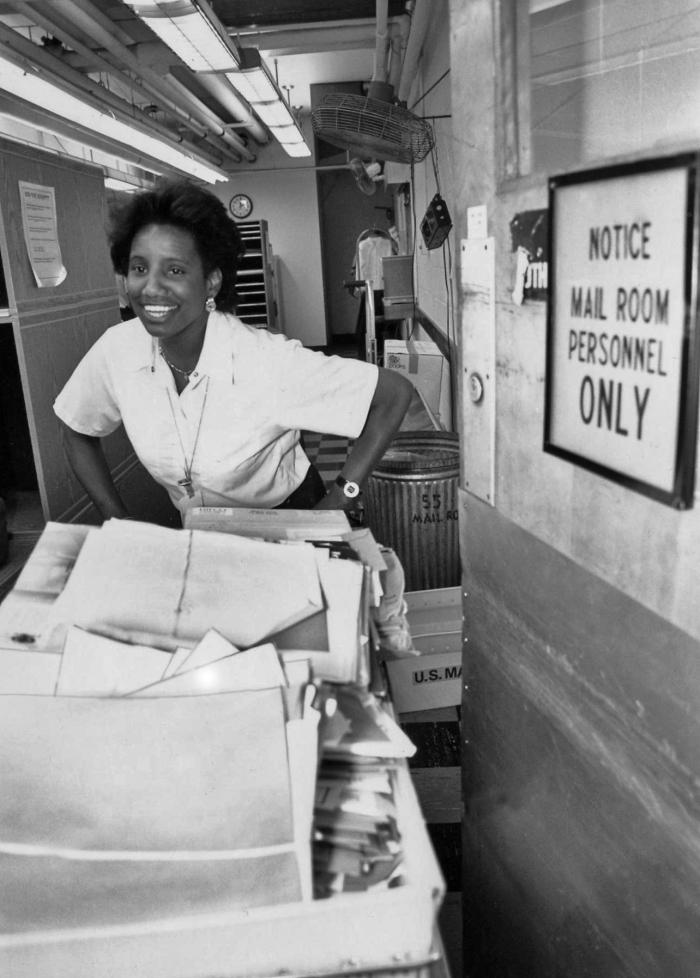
This photograph showed a mailroom worker pushing a mail-cart while about to begin her route, delivering mail to Centers for Disease Control employees in 1991.